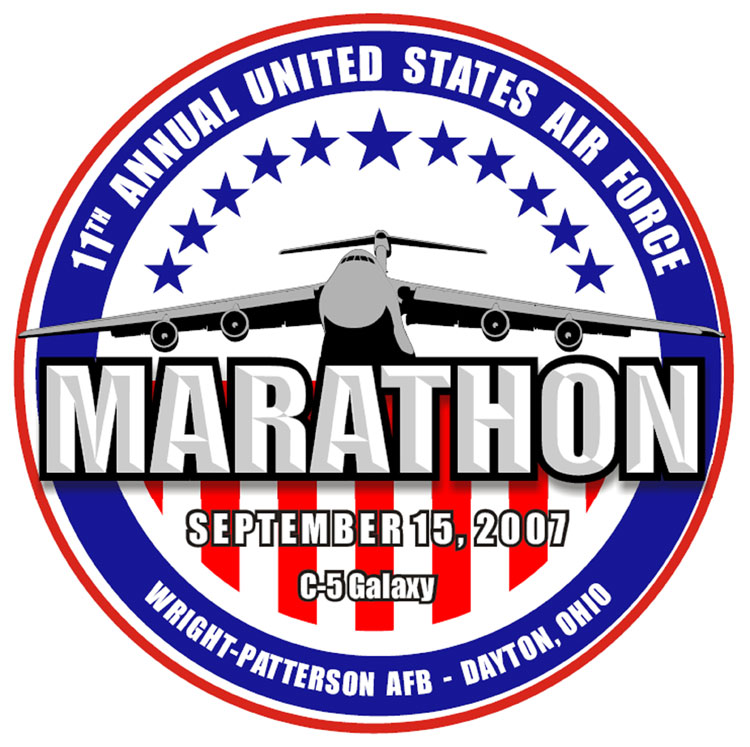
Air Force Marathon a one-of-a-kind event

The logo of the 11th Annual United States Air Force Marathon.